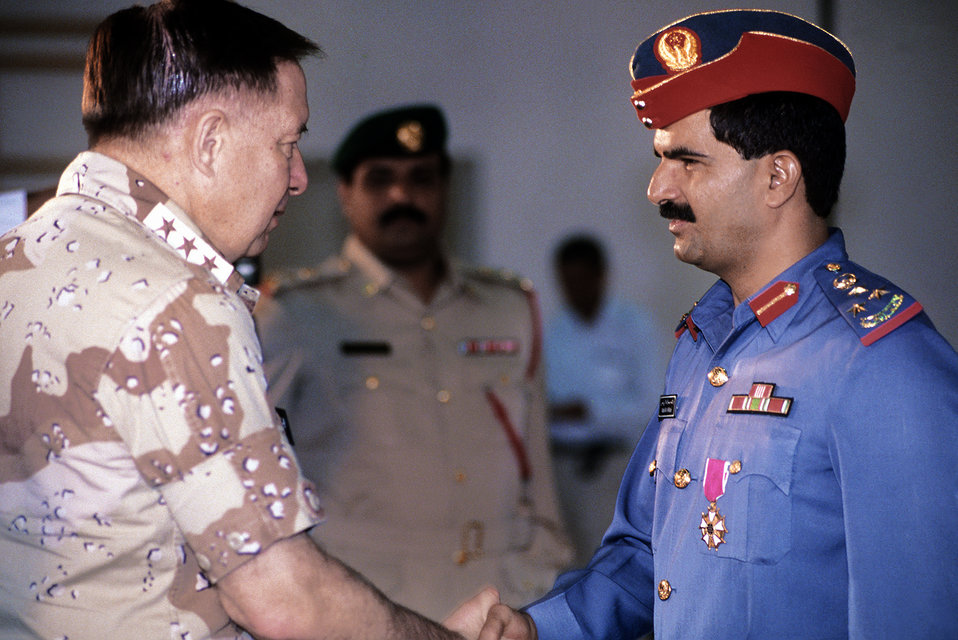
Lt. Gen. Charles A. Horner, former commanding general, U.S. Central Air Force, greets base commander Brig. Gen. Rashid Mubarek Al-Riamy during a tour of coalition forces after Operation Desert Storm.